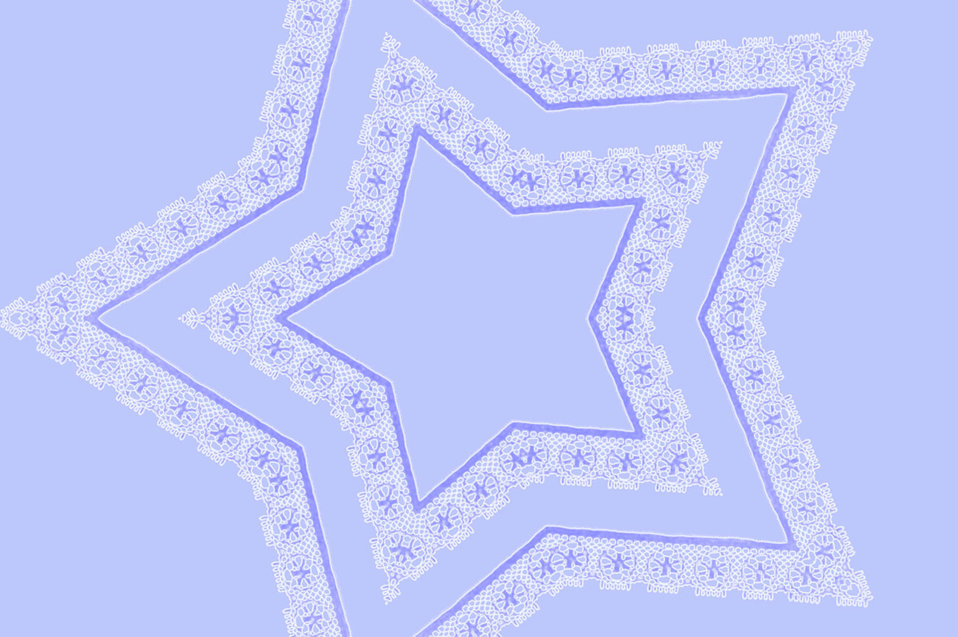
Lavender lace background

Lavender lace star background.